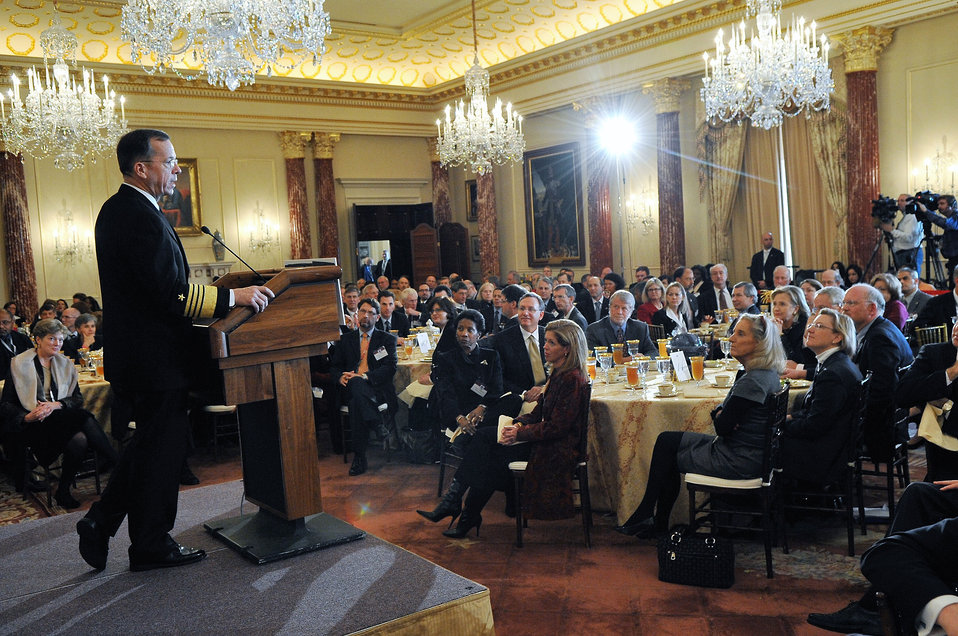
Admiral Mullen Delivers Remarks

Chairman of the Joint Chiefs of Staff, Admiral Michael Mullen, delivers remarks at the 2011 Global Chiefs of Mission Conference at the U.S. Department of State in Washington, D.C., on February 2, 2011.